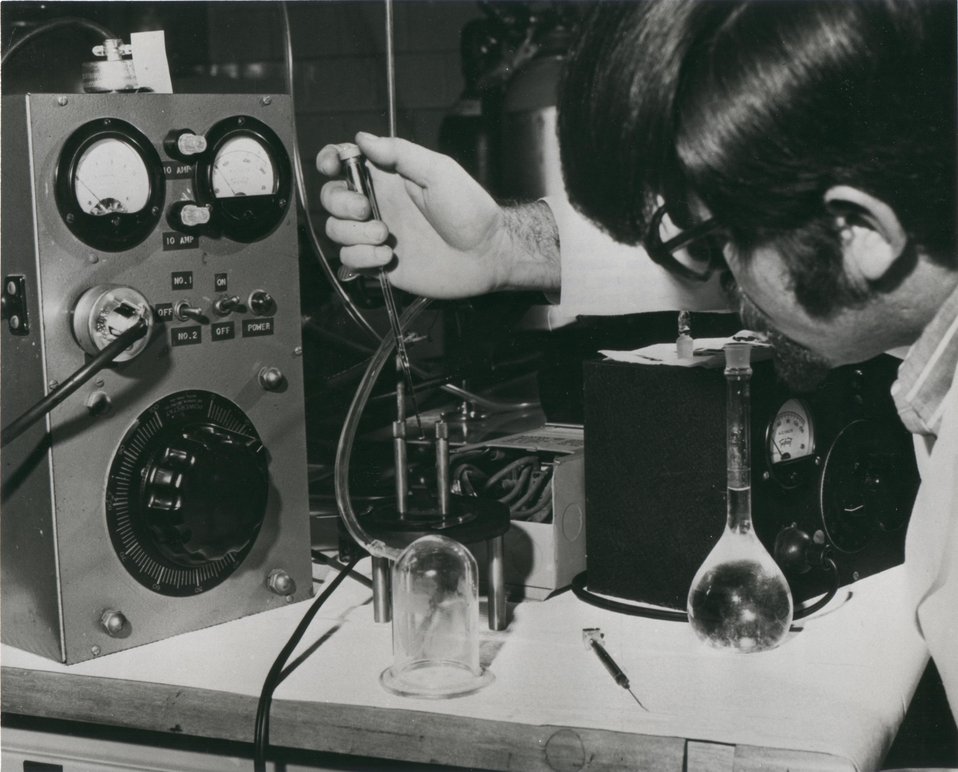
NUCLEAR TECHNOLOGY FOR POLLUTION CONTROL...The toxic effects of trace levels of mercury present in the environment has led to the development of analytical systems for its determination. Circa 1973.